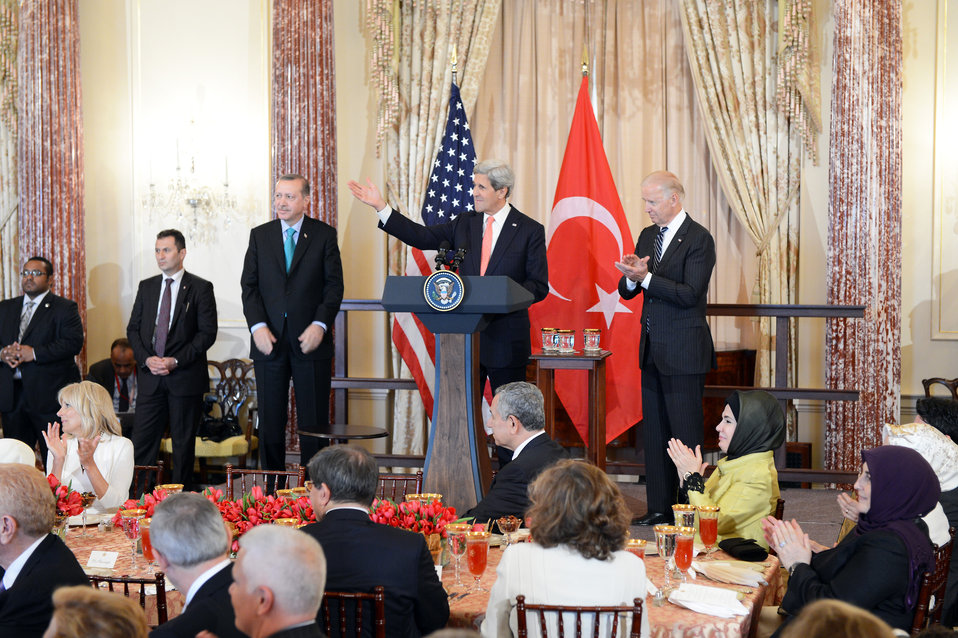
Secretary Kerry Delivers Remarks in Honor of Turkish Prime Minister Erdogan

U.S. Secretary of State John Kerry, with U.S. Vice President Joseph Biden, right, delivers remarks in honor of Turkish Prime Minister Recep Tayyip Erdogan at the U.S. Department of State in Washington, D.C., on May 16, 2013.